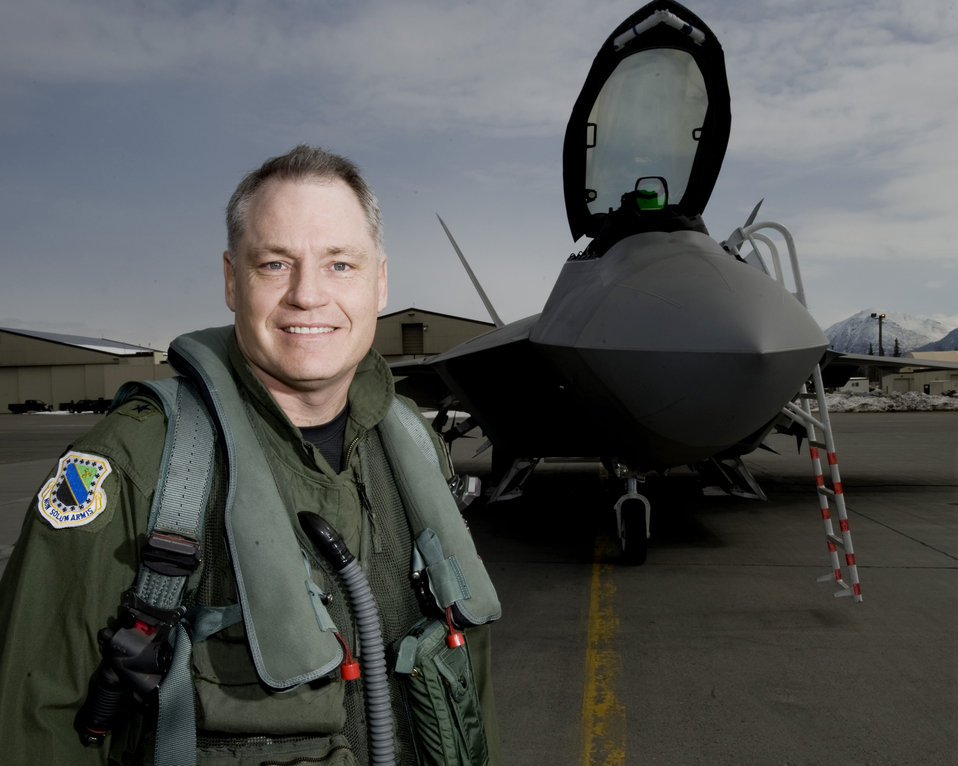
Elmendorf community mourns fallen commander

Brig. Gen. Thomas L.Tinsley, passed away July 27 and was remembered during a memorial serice July 31 at Elmendorf Air Force Base, Alaska. He was the 3rd Wing commander